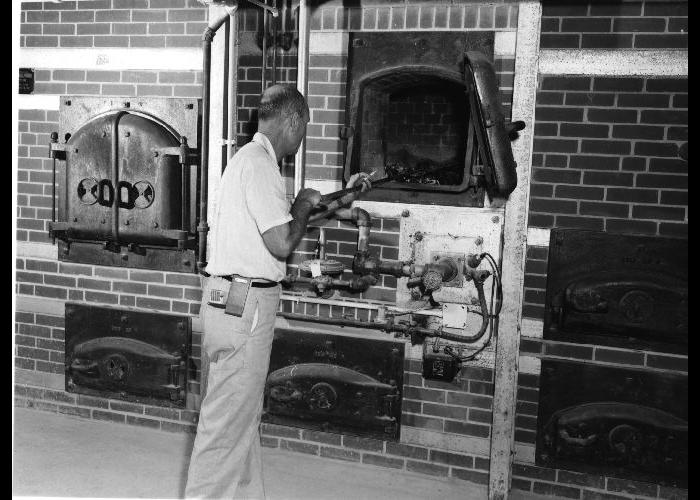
This image from 1960 depicts what was the incinerator in CDC's Building 5.